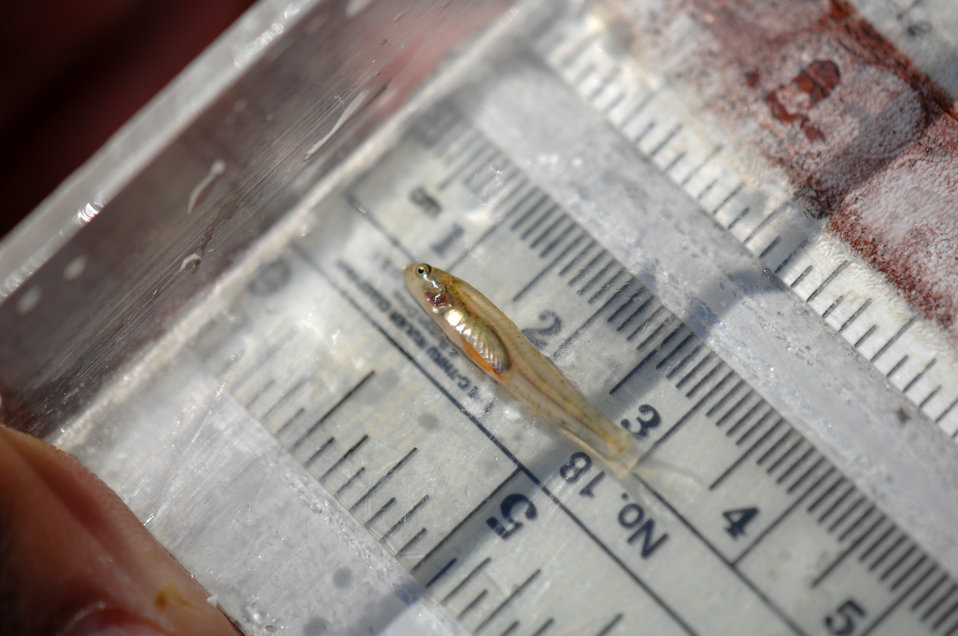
Tidewater Goby 5

Prior to the lagoon breach, the U.S. Fish and Wildlife Service went out to survey for the endangered tidewater goby.